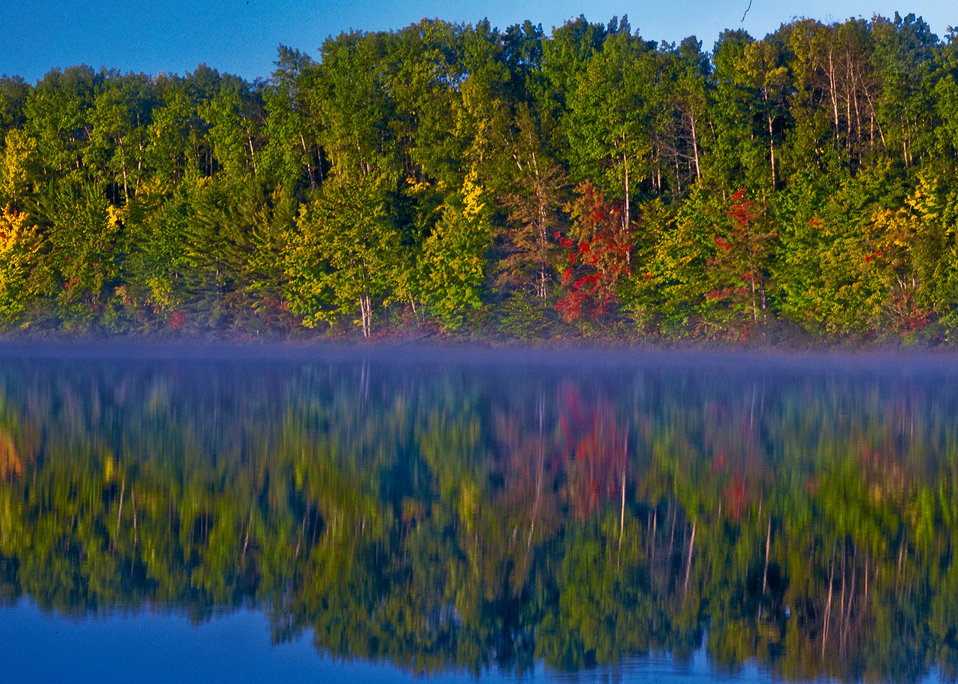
Nature’s color abounds during the fall in the National Forests of the United States. The beauty and sights are endless.USDA Photo by Bob Nichols.